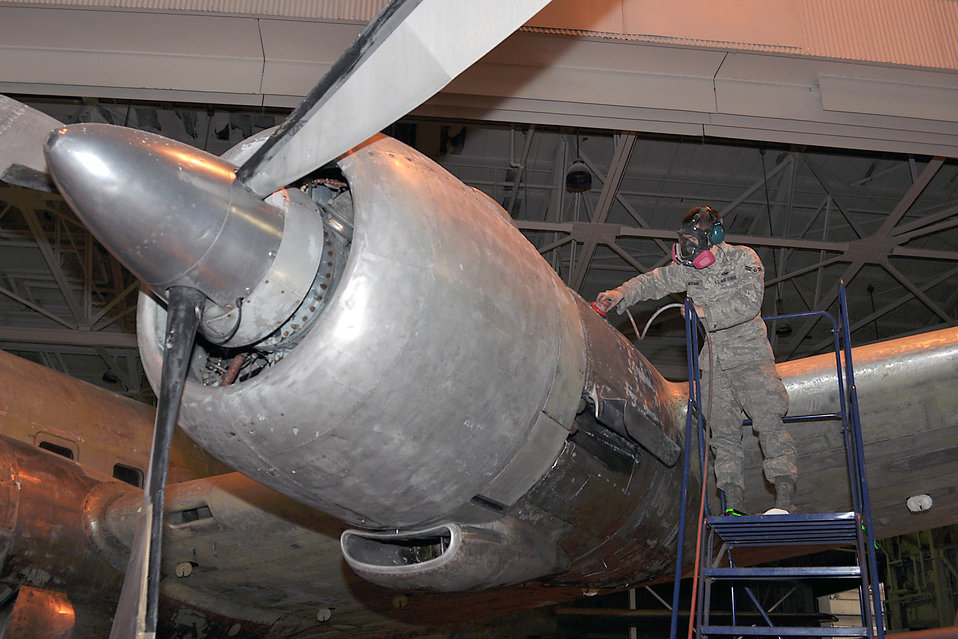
Aircraft Restoration

Airman 1st Class Marco Andrade removes corrosion March 4, 2011, from a C-118 Liftmaster that is being restored by active-duty and Reserve Airmen and civilians at Joint Base McGuire-Dix-Lakehurst, N.J. Airman Andrade is with the 305th Maintenance Squadron. Liftmasters were the first cargo airplanes stationed at JB McGuire and helped the base to define its role as an air mobility gateway. When the restoration is finished, the aircraft will be displayed near the base’s passenger terminal.